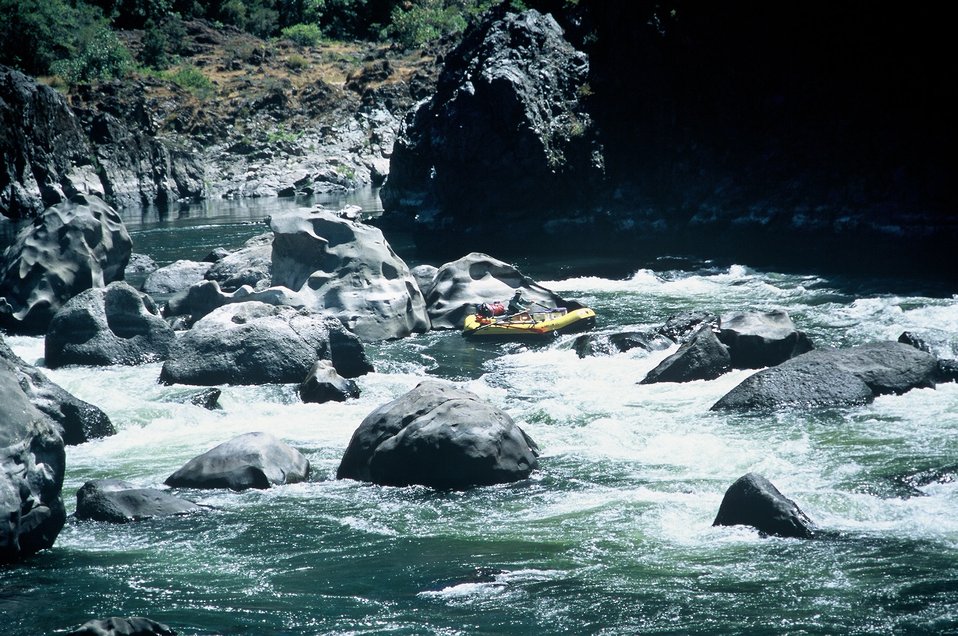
Blossom Rapids